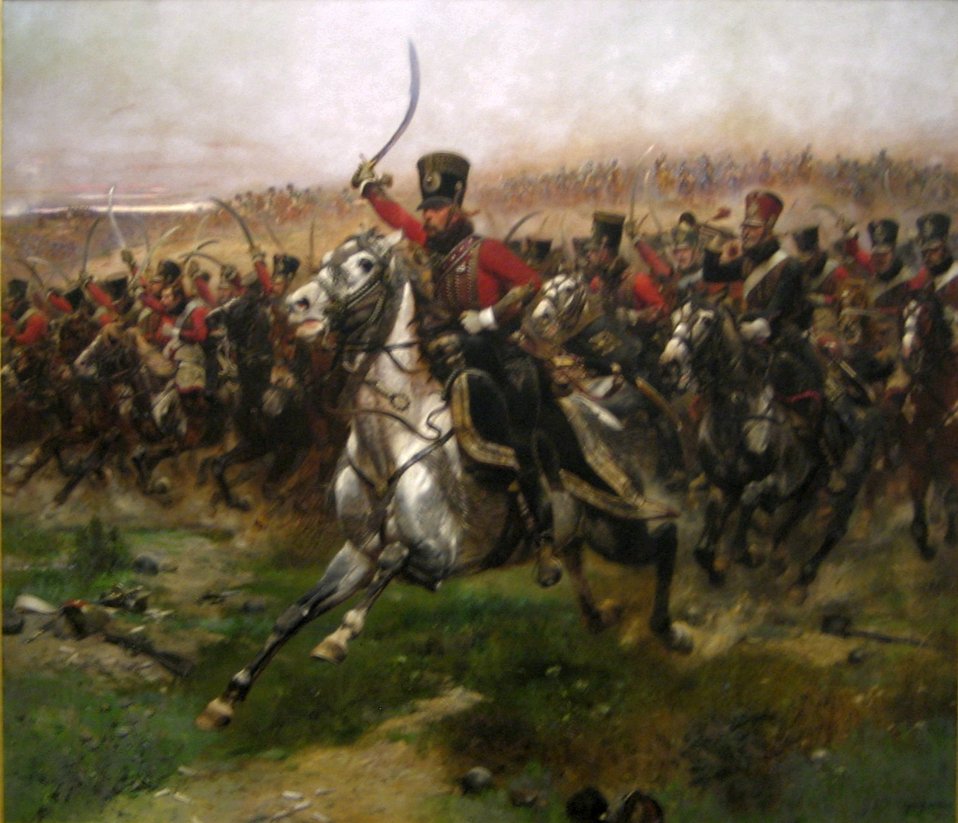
'Vive L'Empereur', oil on canvas painting by Édouard Detaille, 1891, Art Gallery of New South Wales